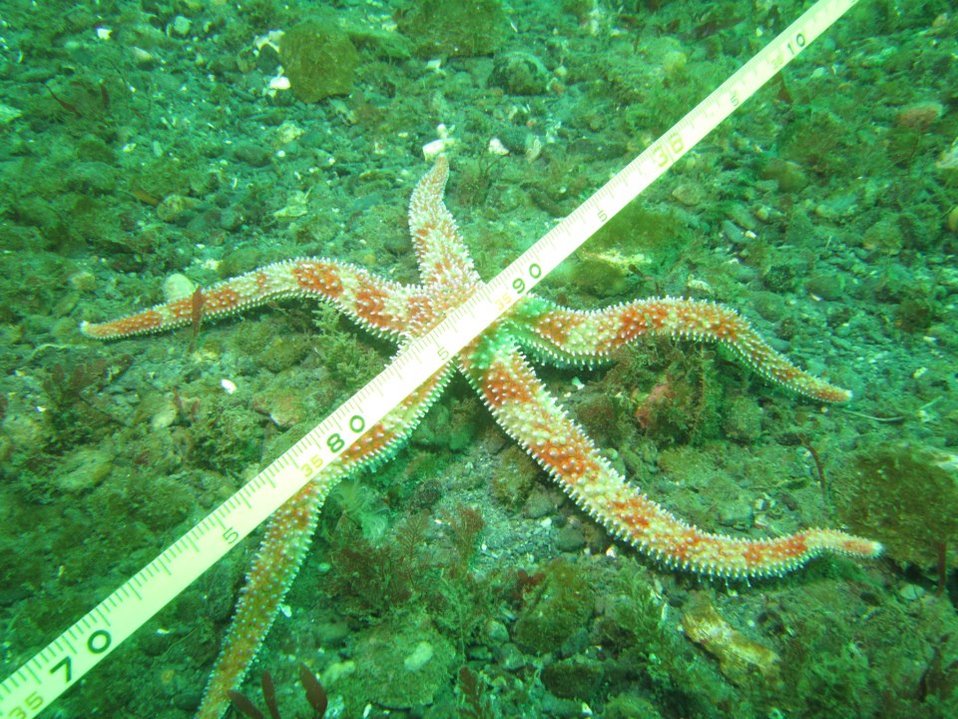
July 26, 2012 Studying impacts to bottom habitats

Here, a rainbow star (Orthaserias hoehleri) is beneath the transect tape used by divers to ensure the same areas are compared year to year off the mouth of the Elwha River.

The removal of the Elwha River dams will affect marine habitats in the Strait of Juan de Fuca, from the flow and deposition of sediment that accumulated behind the dams for nearly 100 years. The newly released sediment can have a variety of effects including burial, inhibition of aquatic reproduction, light reduction, damage to animal gills and filter feeding structures, and alteration of species interactions with their different tolerances and responses to the sediment. Elwha nearshore communities will continue to be surveyed during and after dam removal. Measuring community responses to short and long term changes offers an unprecedented opportunity to gain insight relevant to managing these important marine resources.